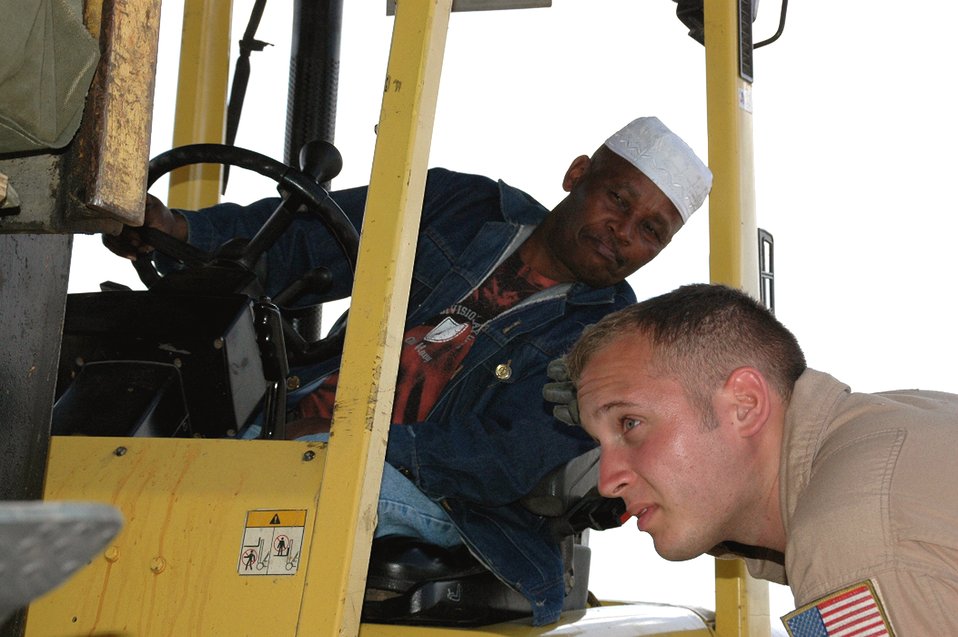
Operation Unity Knight brings relief to Kenya

Senior Airman Chris Elder guides the driver of a forklift carrying a pallet of tents, tarps and mosquito netting to a successful delivery onto an awaiting C-130 Hercules Dec. 9. The Air Force is air dropping the supplies to flood refugees in eastern Kenya. Sergeant Elder is a loadmaster from Dyess Air Force Base, Texas, deployed to the 746th Expeditionary Airlift Squadron. After weeks of rain in Dadaab region in Kenya, camps housing about 160,000 Somali refugees who fled their country 14 years ago following an uprising were damaged and many crops were destoyed. The Combined Joint Task Force - Horn of Africa military officials monitoring the developments began Operation Unity Knight and sent an Air Force C-130 assigned to the 379th Air Expeditionary Wing based in Southwest Asia because the roads in the area were impassable.